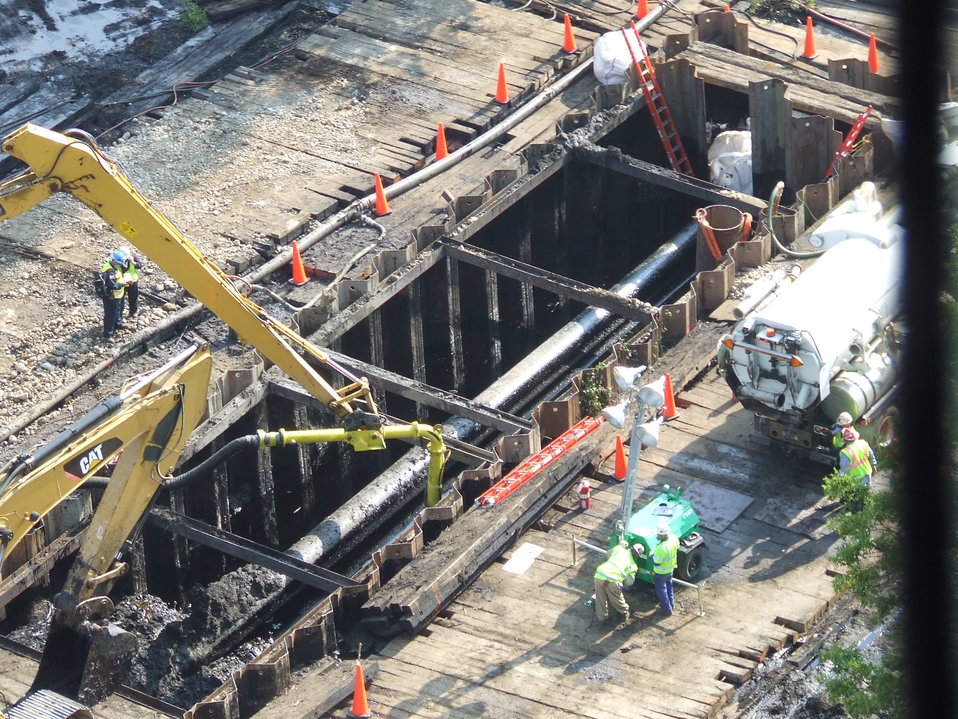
Extracting the Damaged Pipeline

August 6, 2010 - The damaged section of the Enbridge pipeline being prepared for extraction.